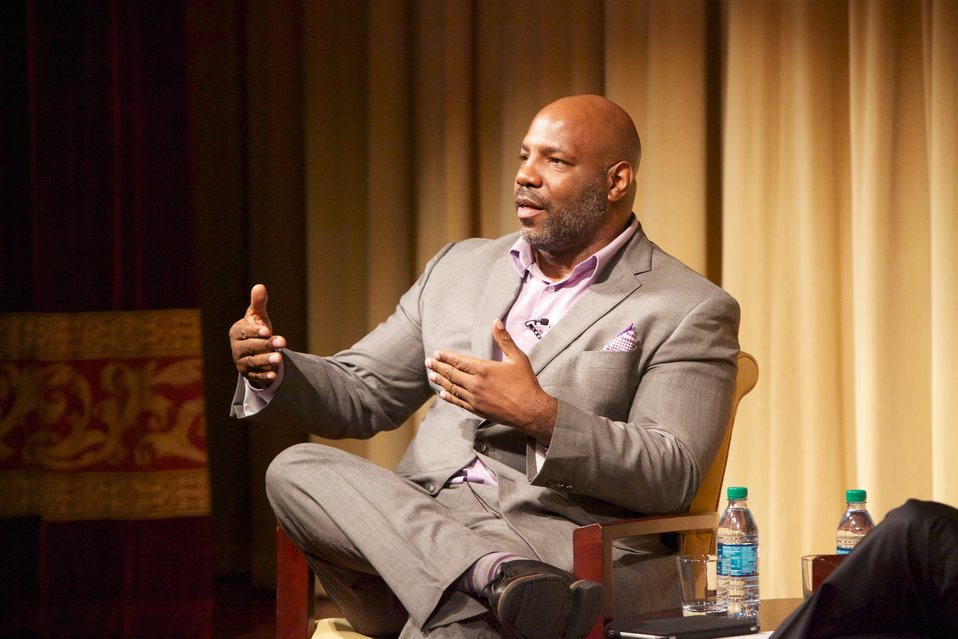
Solomon Northup's Odyssey